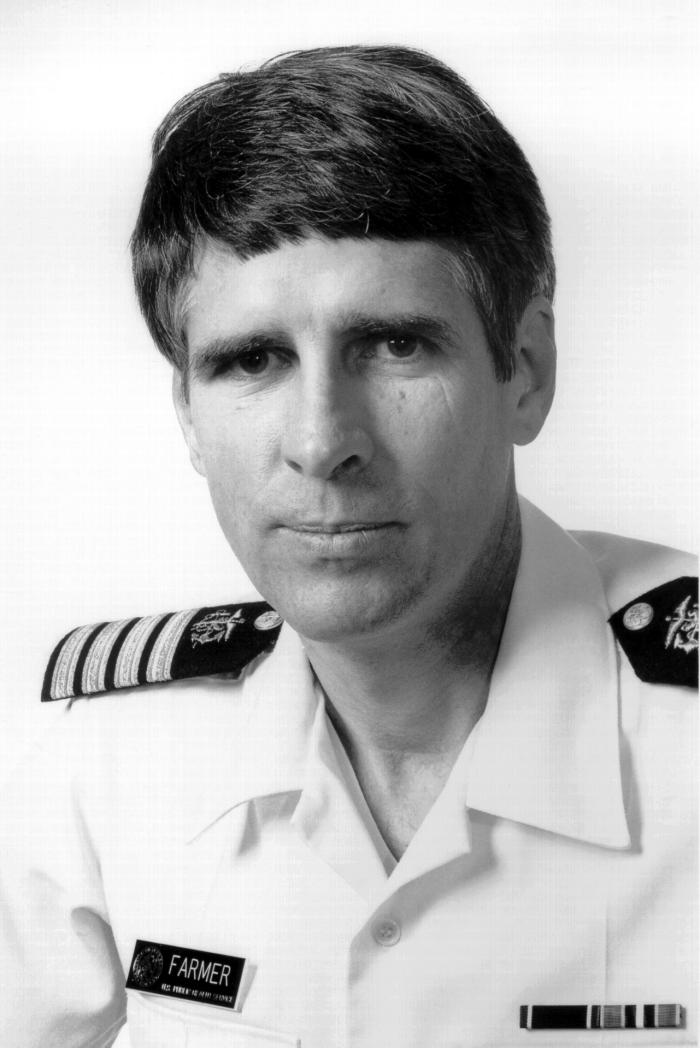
This was a photograph of Public Health Service (PHS) Commissioned Corp Officer Dr. John Farmer.